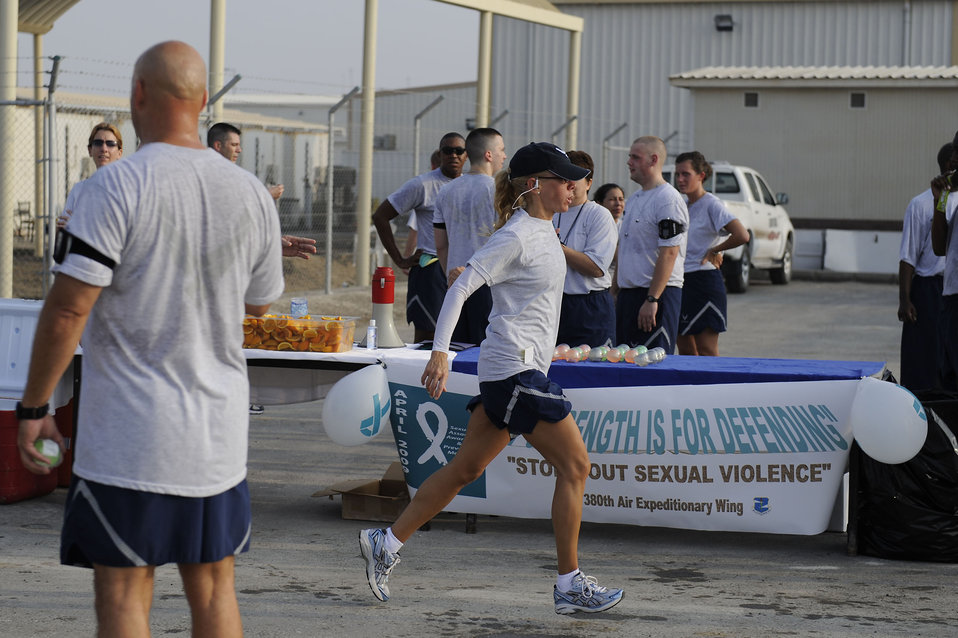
380th runs for Sexual Assault Awareness and Prevention Month

Master Sgt. Lisa Arnold finishes a 10k run April 8 at an air base in Southwest Asia. The run was one of several events held to recognize Sexual Assault Awareness Month. Sergeant Arnold was the fastest female in the 10k run with a time of 48:45. She is assigned to the 380th Expeditionary Communications Squadron and is deployed from Andrews Air Force Base, Md.